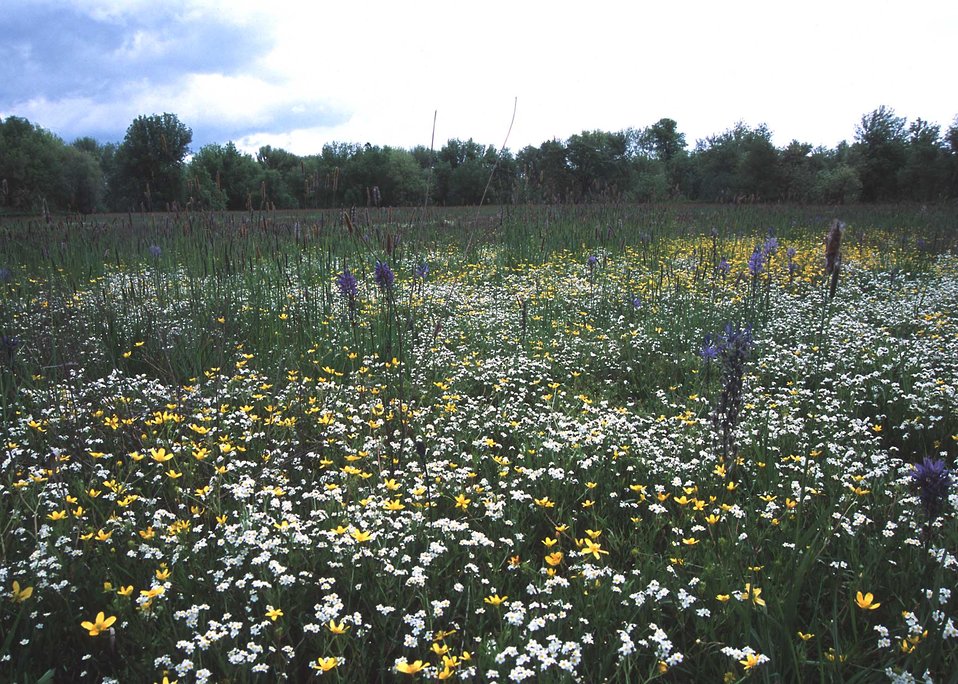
A meadow full of wildflowers in a Wetland Reserve Project near Corvallis, Oregon.